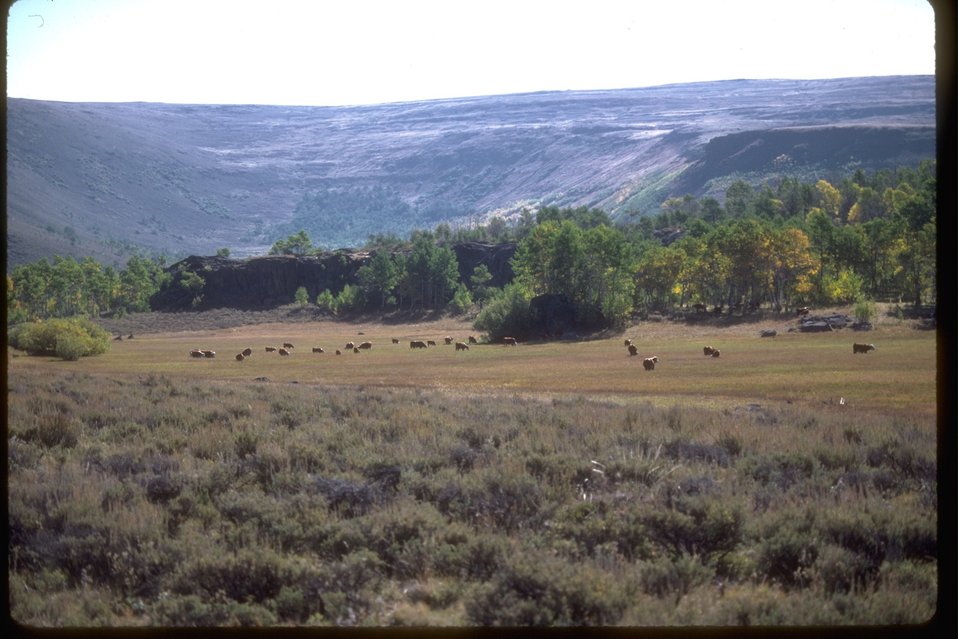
Steens Mountain Whorehouse Meadow.